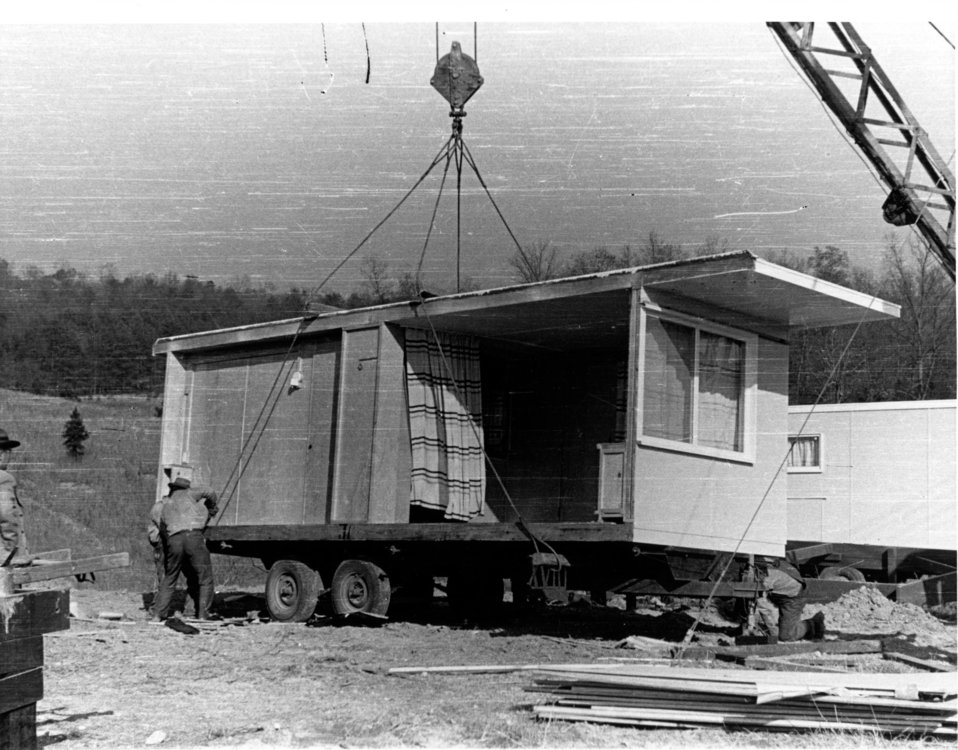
Housing at Oak Ridge